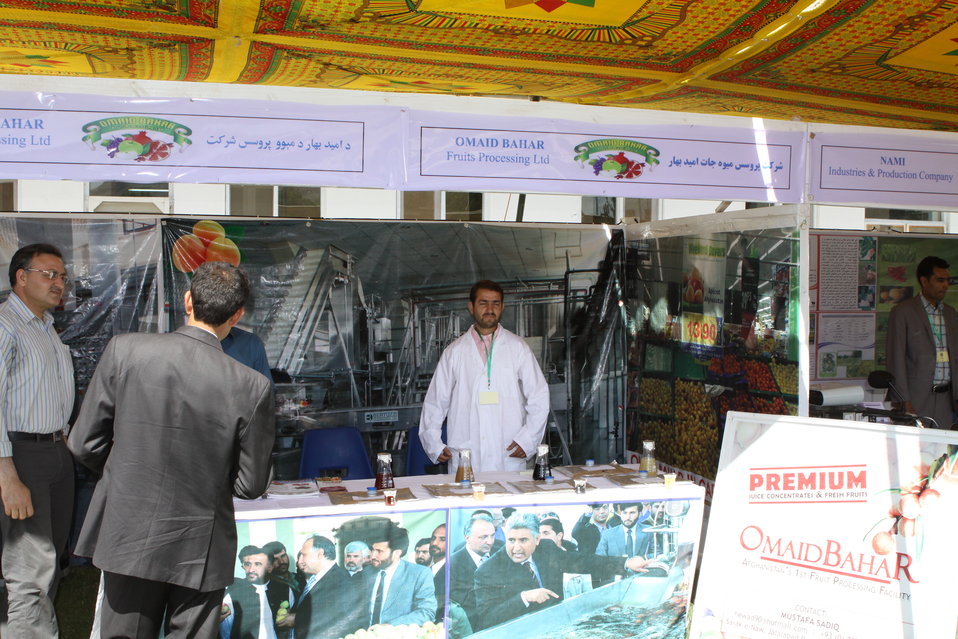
100522 ATVI Graduation 019